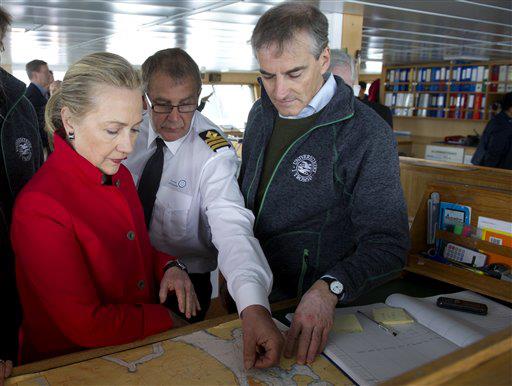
Secretary Clinton and Norwegian Foreign Minister Store Participate in an Arctic Research Vessel Tour

U.S. Secretary of State Hillary Rodham Clinton and Norwegian Foreign Minister Jonas Gahr Store participate in an Arctic research vessel tour in Tromso, Norway, on June 2, 2012.